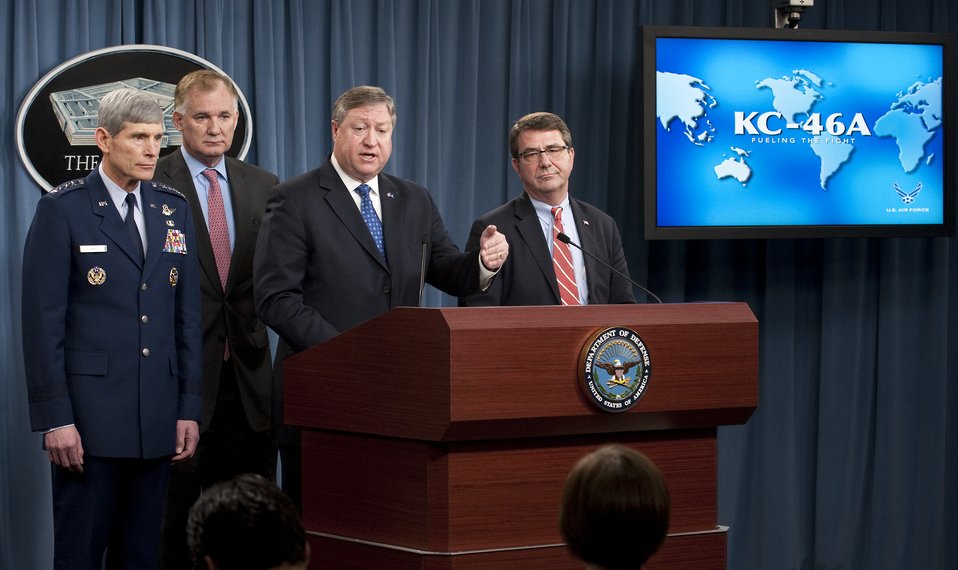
KC-46A tanker contract

Secretary of the Air Force Michael Donley (at podium) answers a question from a reporter after he announced during a press conference in the Pentagon Feb. 24, 2011, that the KC-46A tanker contract was awarded to The Boeing Company. Behind Secretary Donley (from the left) are Air Force Chief of Staff Gen. Norton Schwartz, Deputy Secretary of Defense William Lynn and Undersecretary of Defense for Acquisition, Technology and Logistics Ashton Carter.